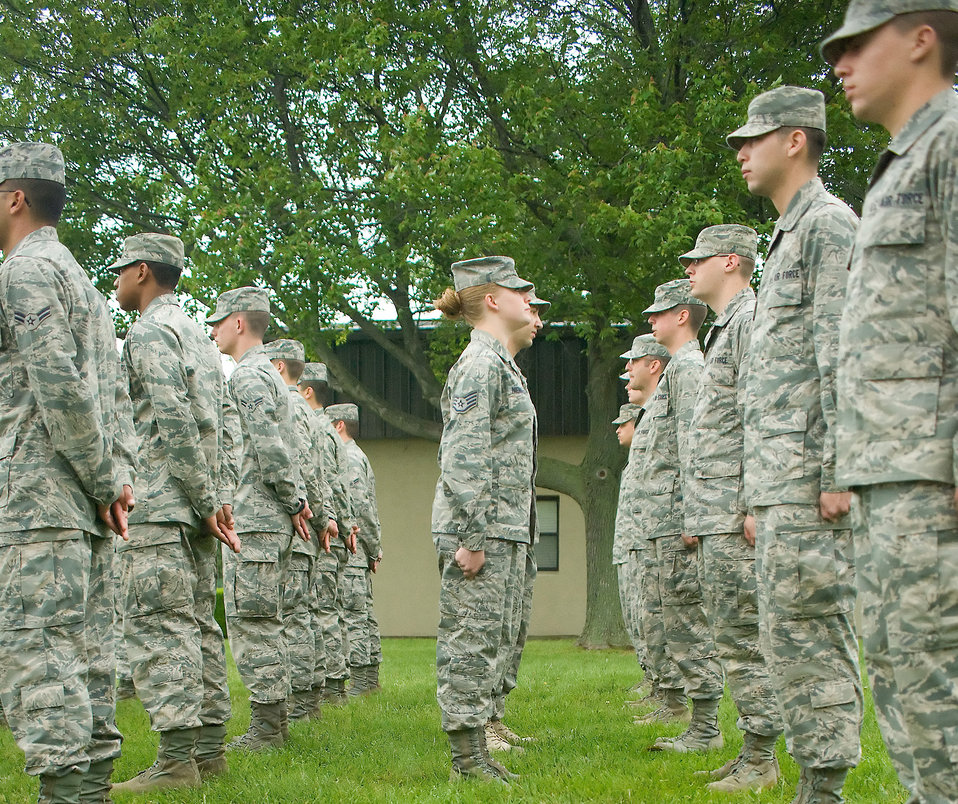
Military training leaders

Staff Sgt. Jessica Nienhueser (center) and Staff Sgt. Ali Bueshi, 373rd Training Squadron military training leaders, inspect Det. 3 Airmen's appearances May 24, 2011, at Dover Air Force Base, Del. The MTLs assure that Airmen in technical training retain the standards and discipline taught to them during basic military training.